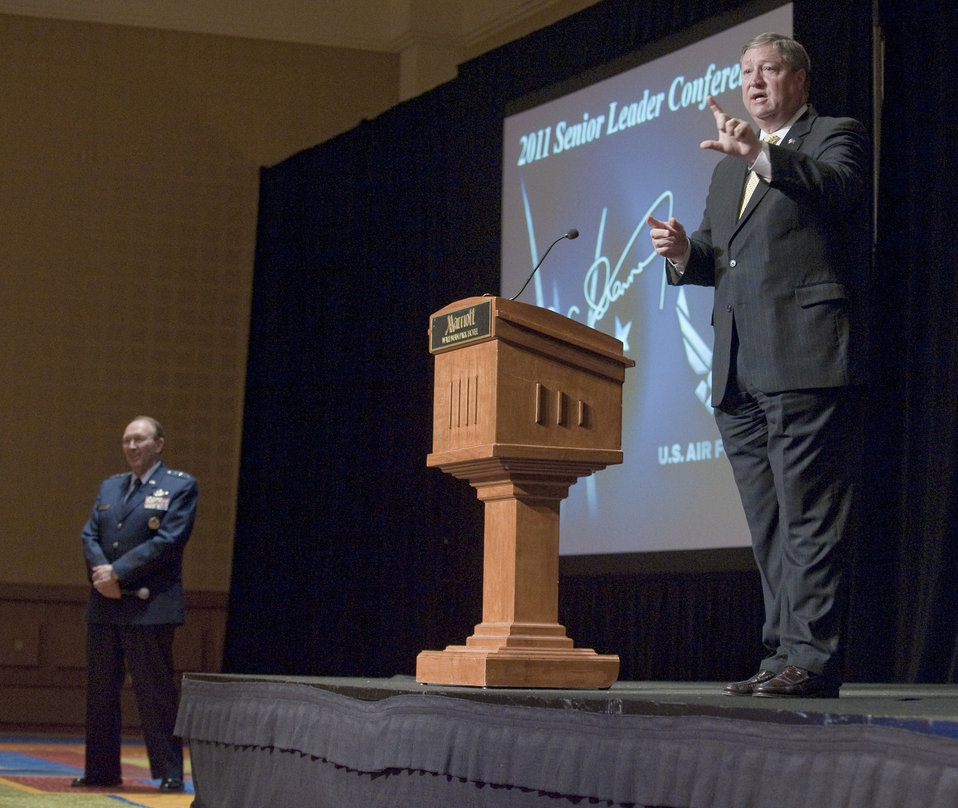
Air Force Reserve Command Senior Leader Conference

Chief of the Air Force Reserve and Air Force Reserve Command Commander Lt. Gen. Charles Stenner (left) looks on as Secretary of the Air Force Michael Donley answers questions from the audience during the 2011 Air Force Reserve Command Senior Leaders Conference May 16, 2011, in Washington, D.C.